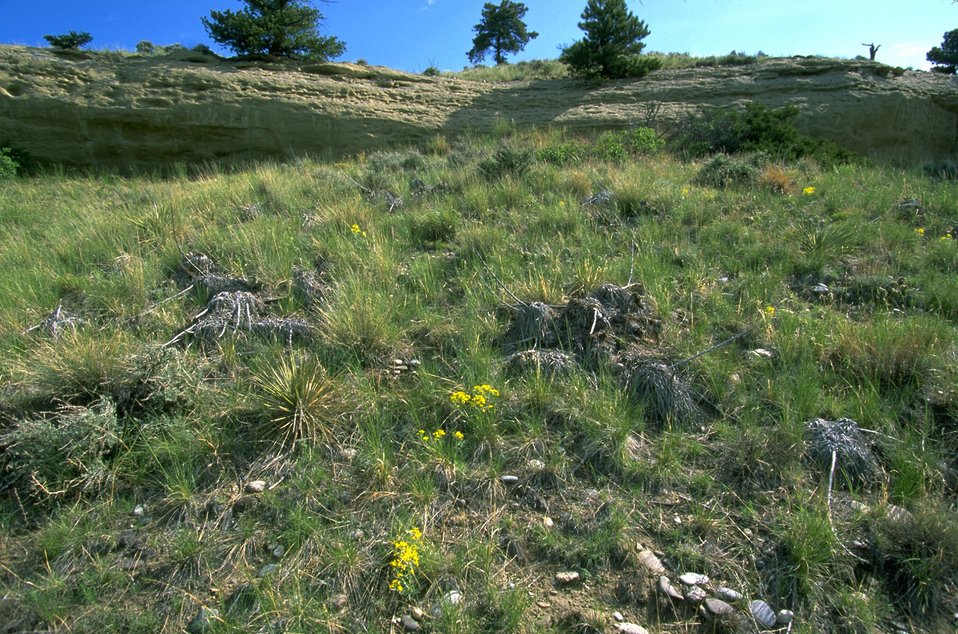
Sandstone bluff and slope vegetation including small soapweed and sumac in the Four Dances Natural Area